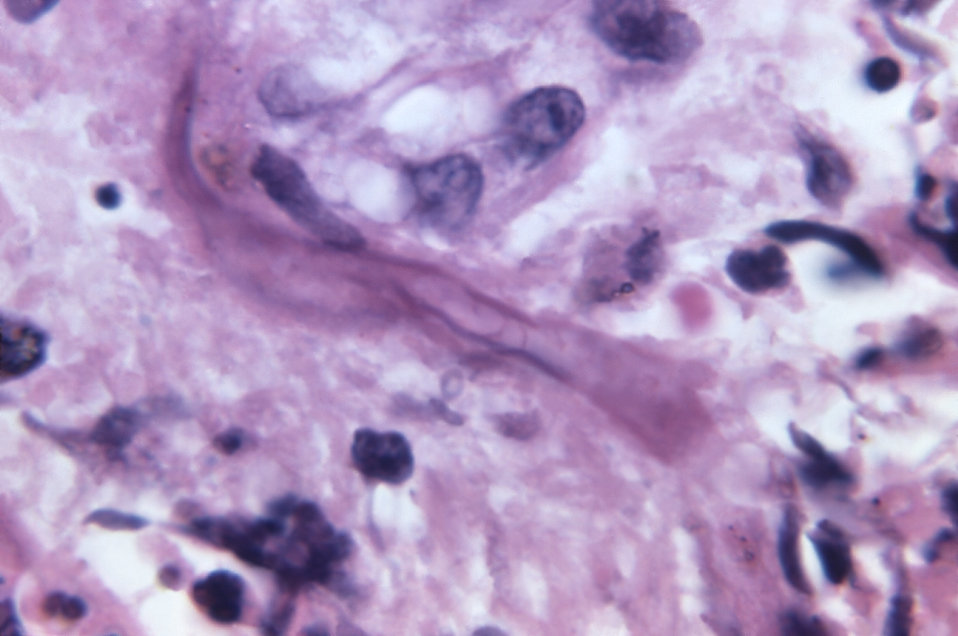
Magnified 1125X, twice that of PHIL 10891, this photomicrograph revealed the presence of the fungal organism, Schizophyllum commune, which is made evident by the visible S. commune mycelium. The mycelium is composed of of numerous branching filaments known as hyphae, and is considered the vegetative portion of the mould.